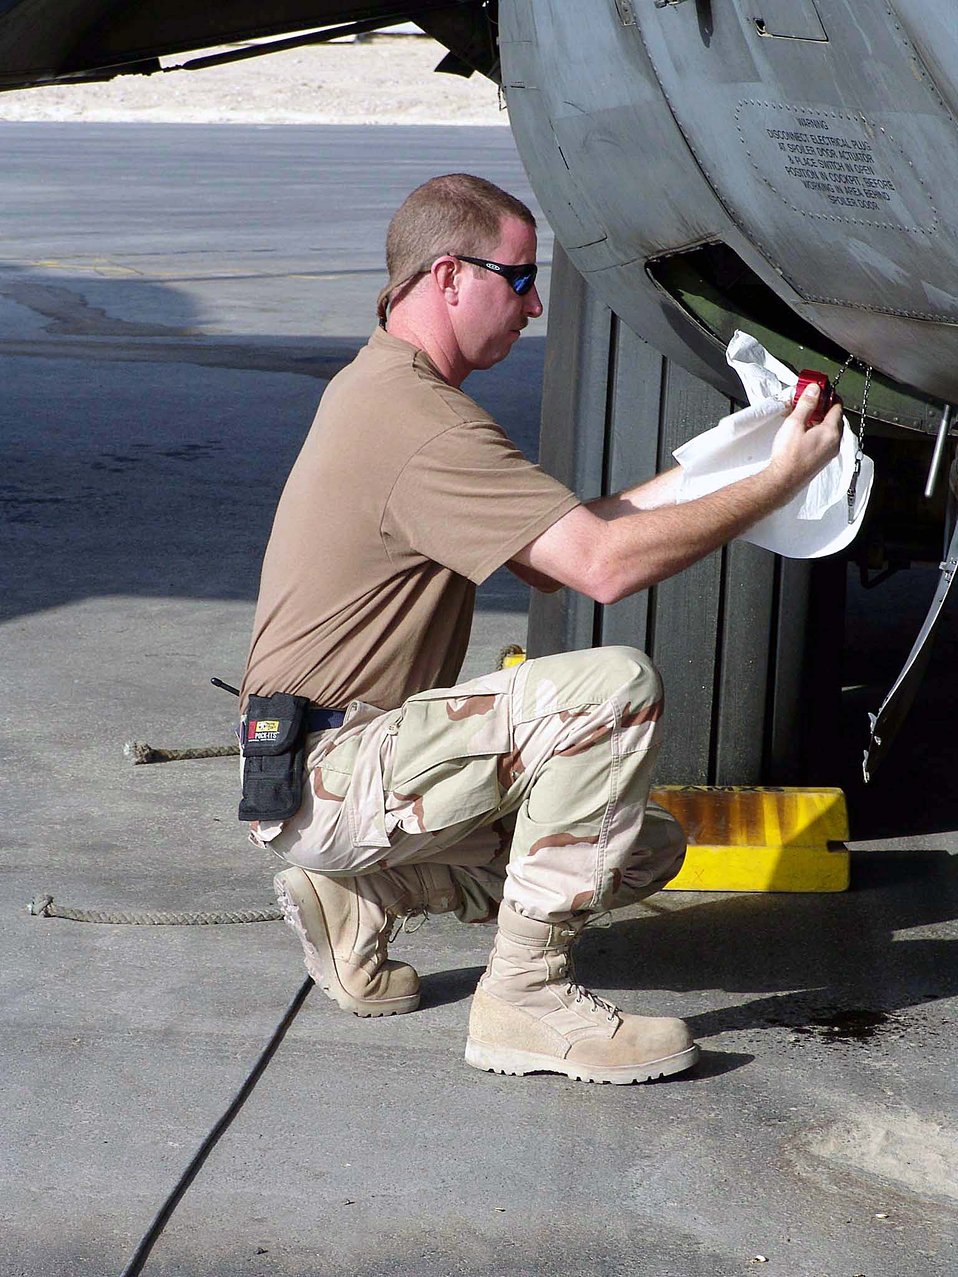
Gettin' ready

SOUTHWEST ASIA -- Tech. Sgt. Scott Wagner checks a C-130 Hercules for oil leaks Oct. 18 before the aircraft flies on a mission into Iraq. He is assigned to the 746th Expeditionary Maintenance Squadron at a forward-deployed location and is from the Wyoming Air National Guard.